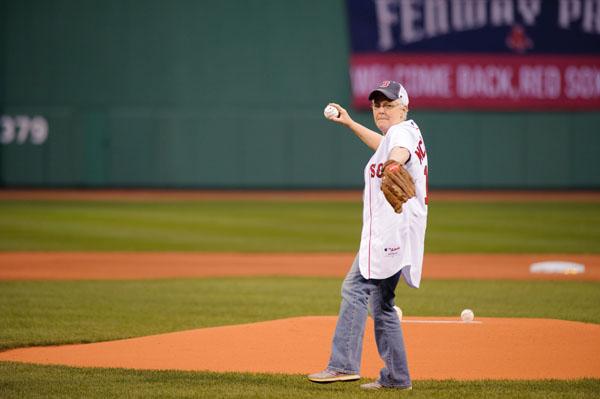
Day in the Life - Earth Day, April 22, 2014

7:07 pm – First pitch! (12/12)